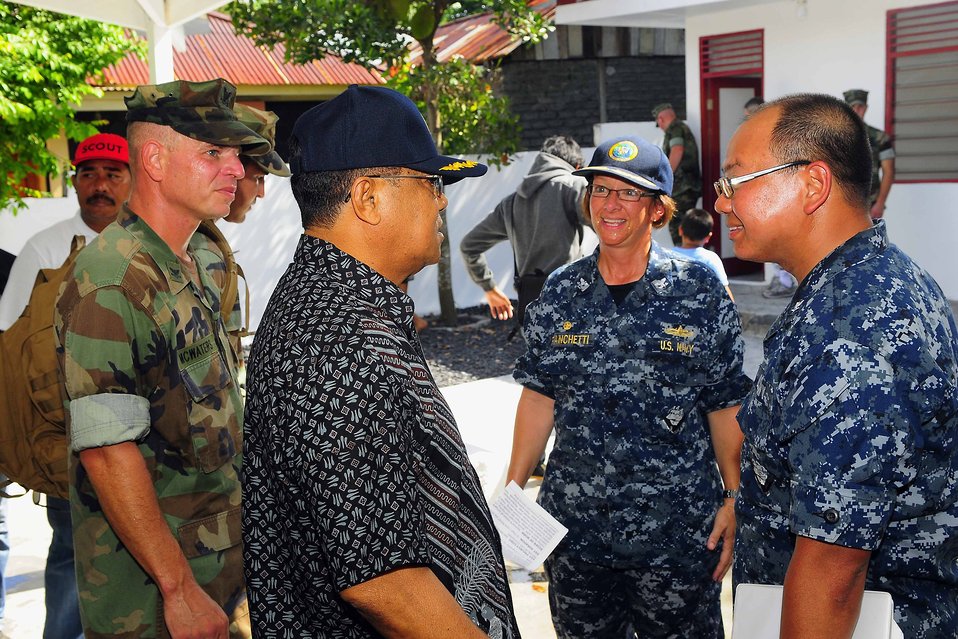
The Vice Wkil Walikota of Ternate, Drs. Amas Dinsie, Speaks With PP 2010 Commander Capt Franchetti

The Vice Wkil Walikota of Ternate, Drs. Amas Dinsie, speaks with Pacific Partnership 2010 Commander Capt. Lisa M. Franchetti, as others present at a ribbon cutting for an engineering civic action program on July 23, 2010, in Ternate, Indonesia. Pacific Partnership 2010 is the fifth in a series of annual U.S. Pacific Fleet endeavors conducted in Indonesia as a disaster relief exercise aimed at strengthening regional partnerships.